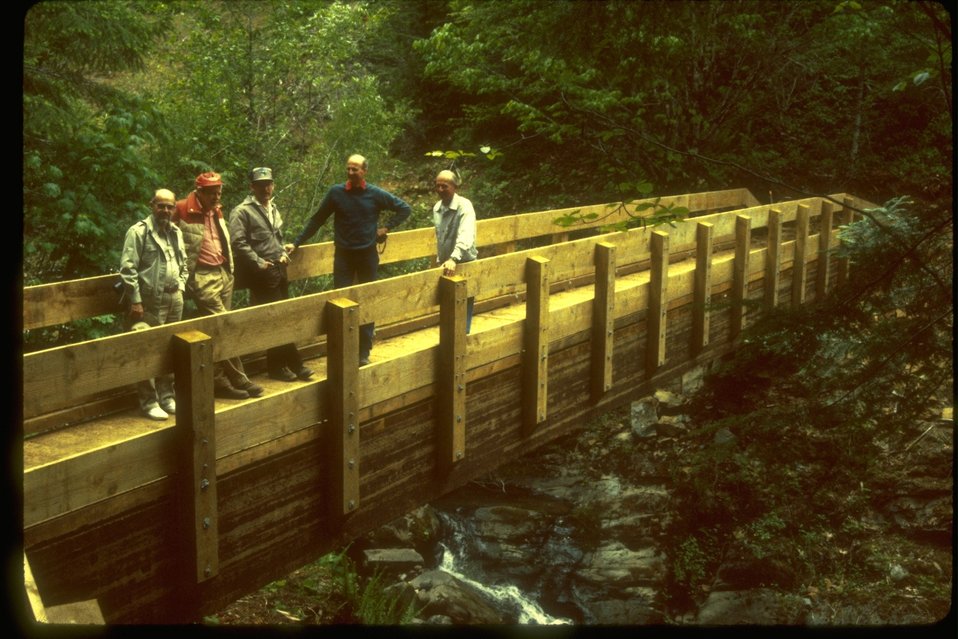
People standing on the bridge of the North Umpqua Trail.